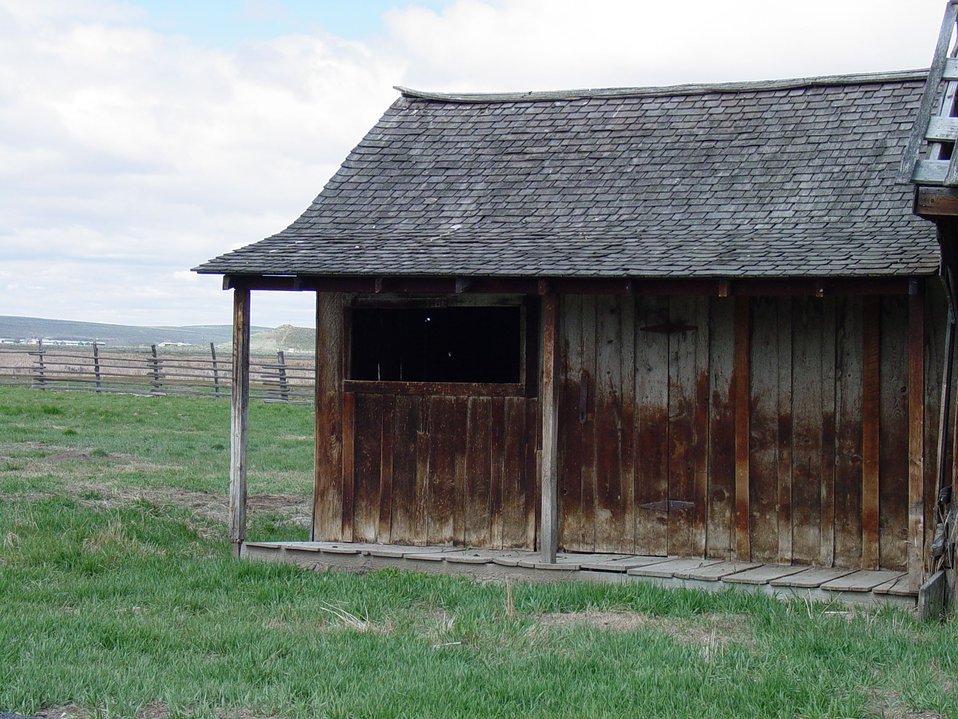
former homestead, Malheur Refuge

homestead at the historic Sod House Ranch that was later converted into a kitchen